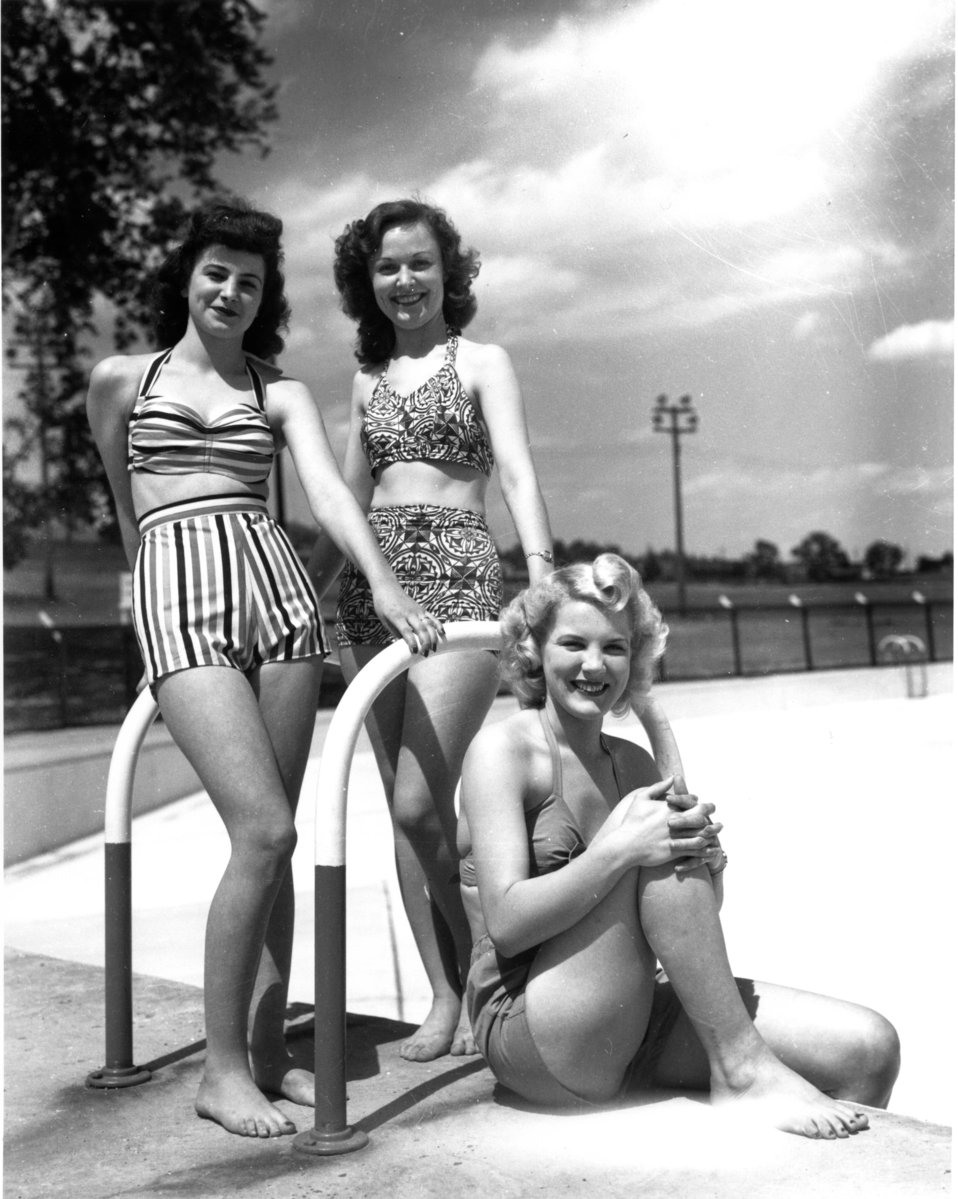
Recreation at Oak Ridge